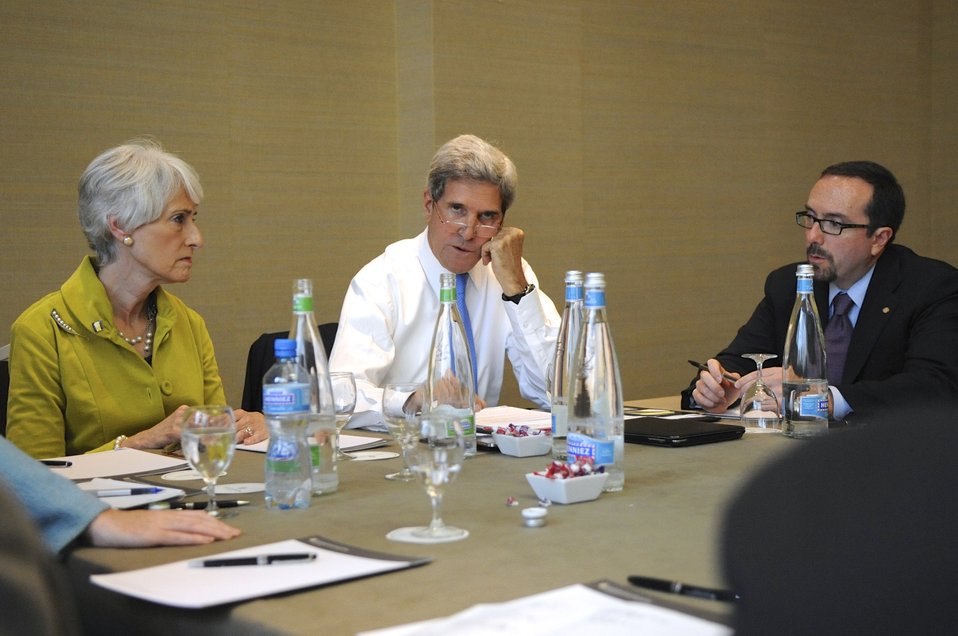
Secretary Kerry Outlines Framework for Chemical Weapons Negotiations

1:39 p.m., September 12, 2013 - U.S. Secretary of State John Kerry, flanked by Undersecretary Wendy Sherman and Executive Secretary John Bass, outlines for a U.S. interagency team the framework for upcoming negotiations with Russian officials regarding the elimination of Syrian chemical weapons.